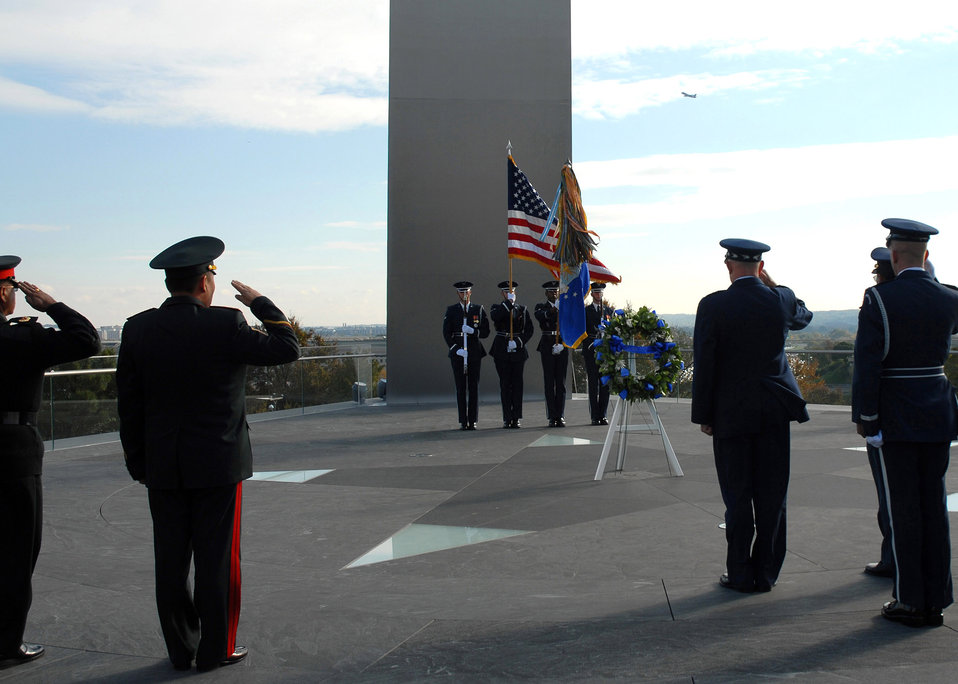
Paying Respect

Chief of Staff of the Air Force Gen. T. Michael Moseley and Pacific Air Chiefs from Brunei, Cambodia, Canada, Chile, Japan, Mongolia, Nepal, New Zealand and the Philippines salute while Taps is played during a foreign dignitary arrival and wreath laying ceremony Tuesday, Oct. 24, 2006, at the Air Force Memorial.